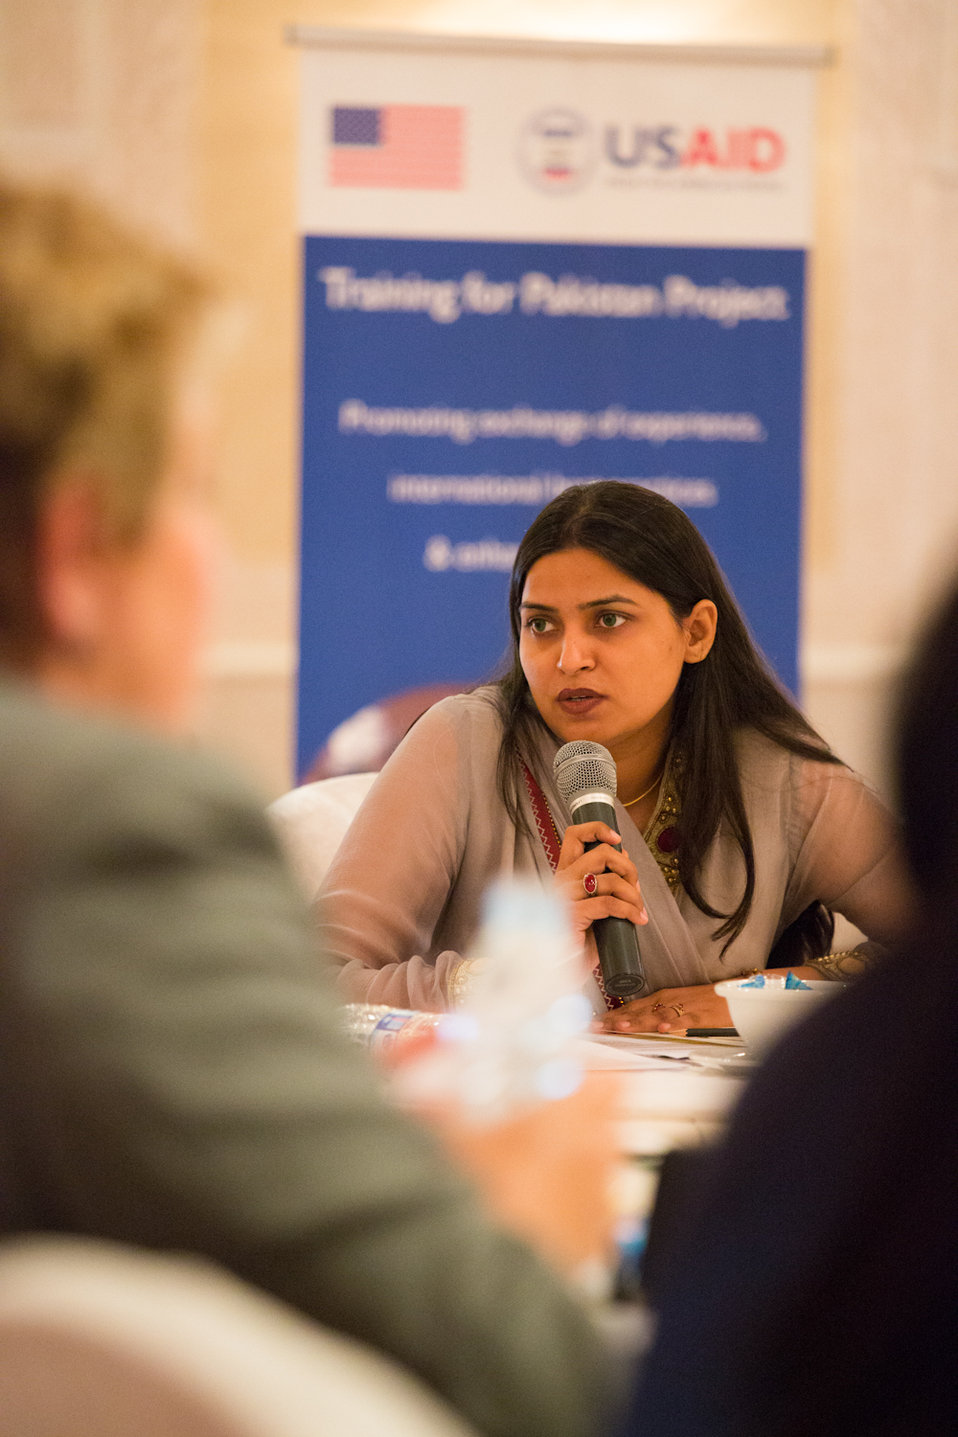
US-funded Study Tour Offers New Ideas for Addressing Gender-Based Violence

Islamabad, September 6, 2012 - Madiha Latif, Manager of Panah Shelter, Karachi, takes part in the discussion.